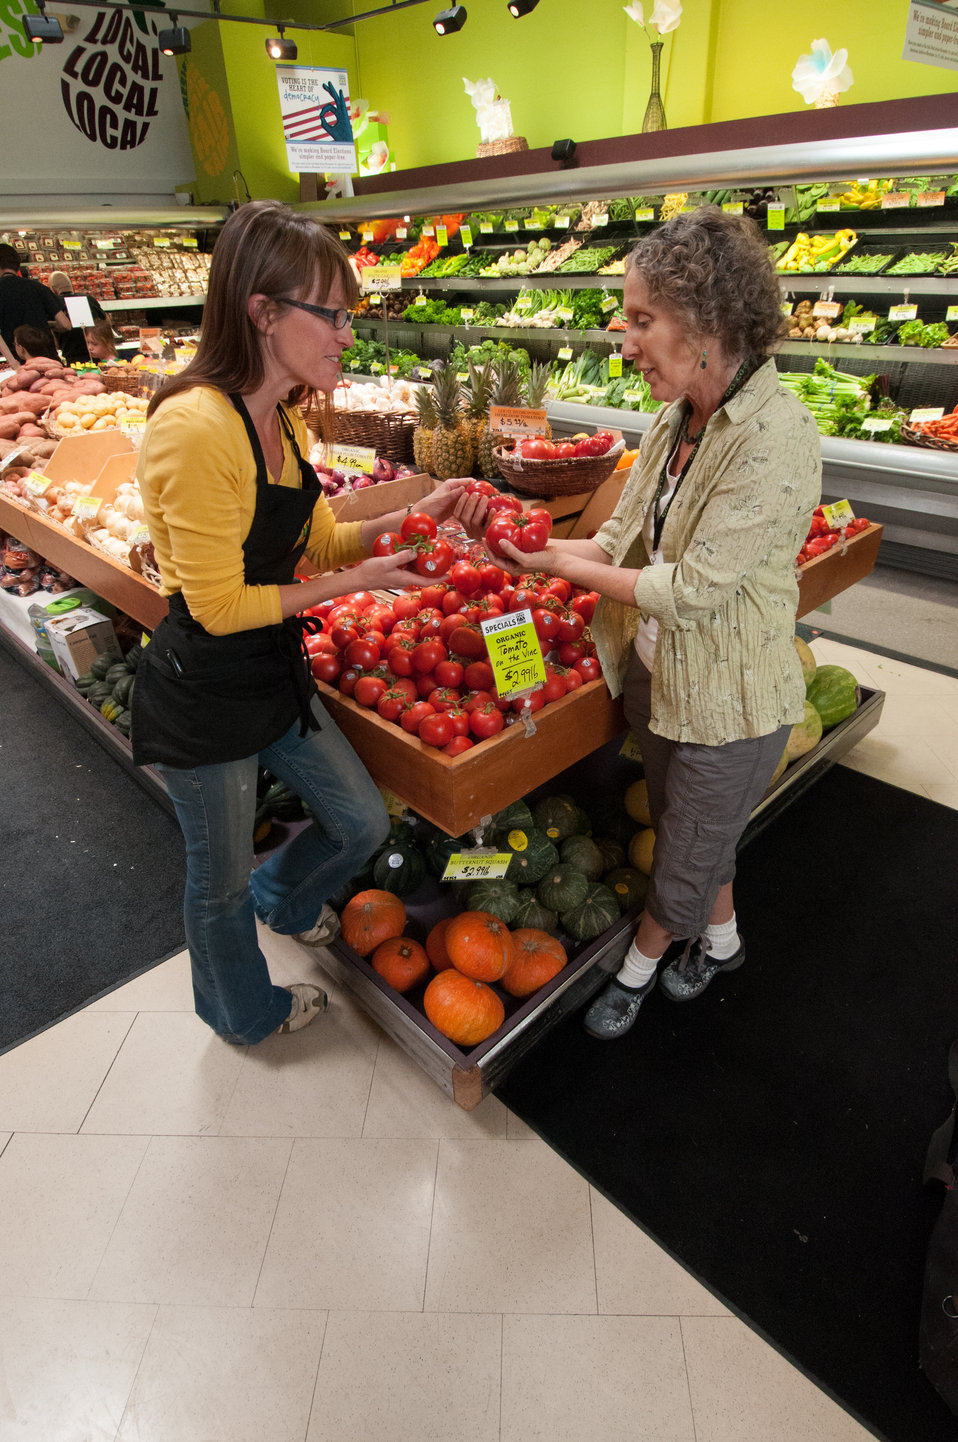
La Montanita Co-op Produce Manager Amanda Dobron shows Membership and Community Development Coordinator Robin Seydel heirloom tomatoes at the La Montanita Co-op Valley Store in Albuquerque, NM on Monday, Jun. 10, 2013. La Montanita Co-op in is a 17,000 member socially responsible, locally owned food cooperative that supports a stable market for local farmers and producers of sustainable and organic regional/local agriculture in Albuquerque, NM. The co-op has a distribution center and two stores in Albuquerque; Valley and Nob Hill and stores in Santa Fe and Gallup, NM.